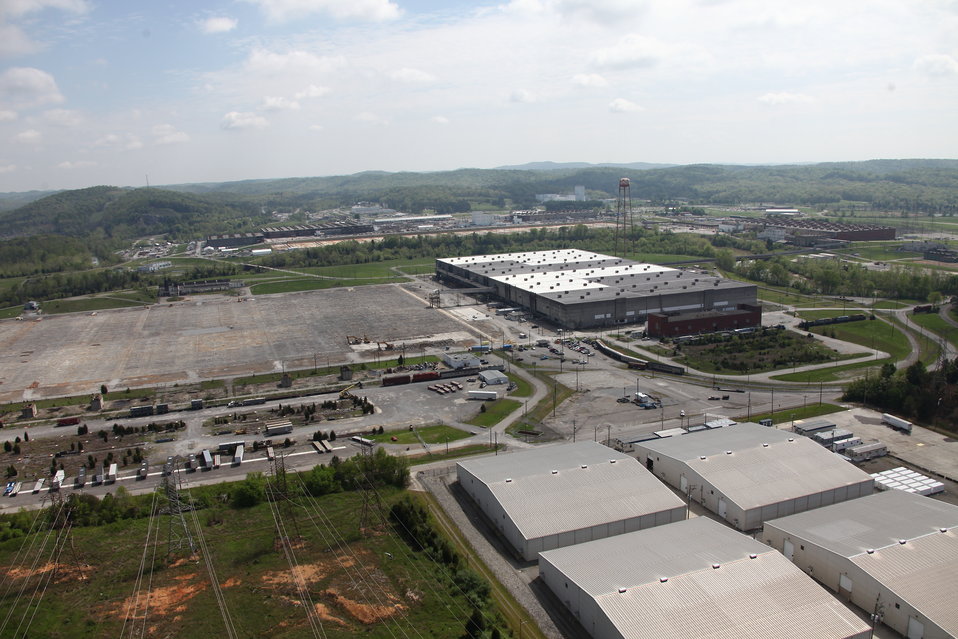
ETTP